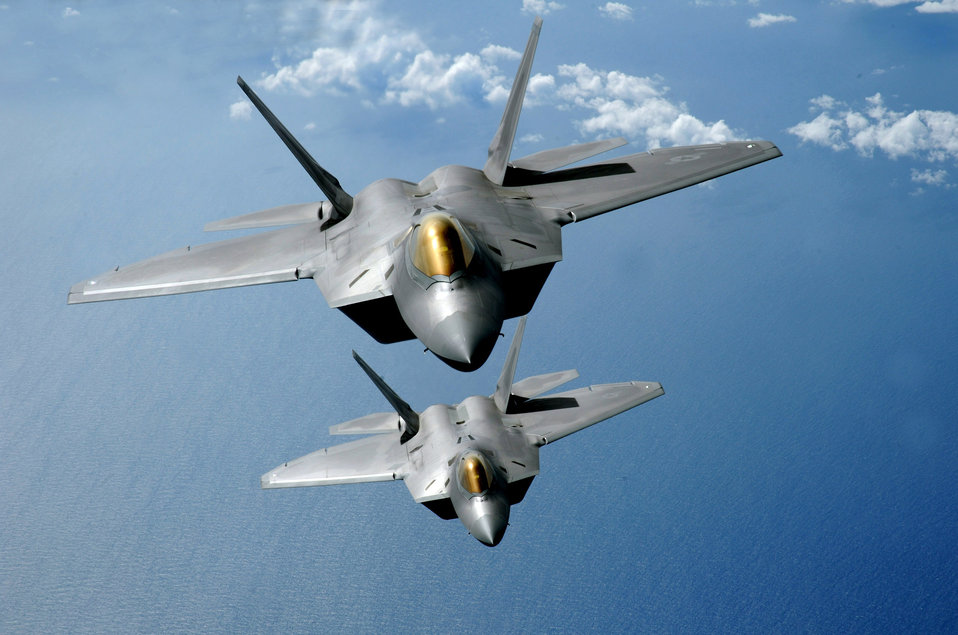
Prowling the Pacific

Two F-22 Raptors fly over the Pacific Ocean during a theater security mission March 9 as part of a deployment to Andersen Air Force Base, Guam. The Raptors are deployed from Elmendorf AFB, Alaska.